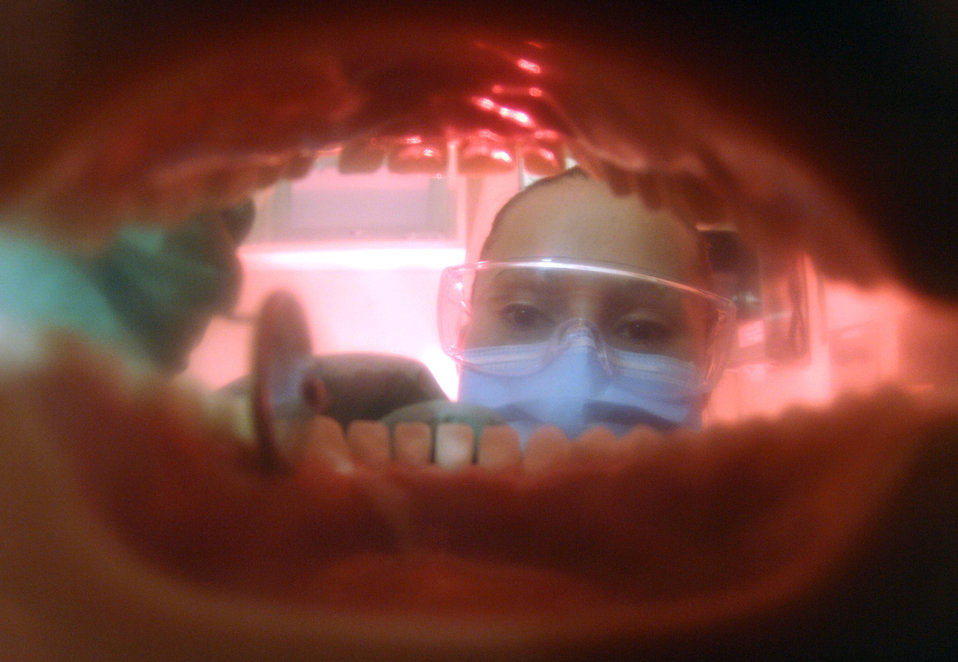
Say 'Ahhh'

Senior Airman Cynthia Atilano takes a look inside a set of teeth Oct. 2 before scaling off the plaque. Airman Atilano is a dental technician with the 5th Medical Operations Squadron at Minot Air Force Base, N.D.